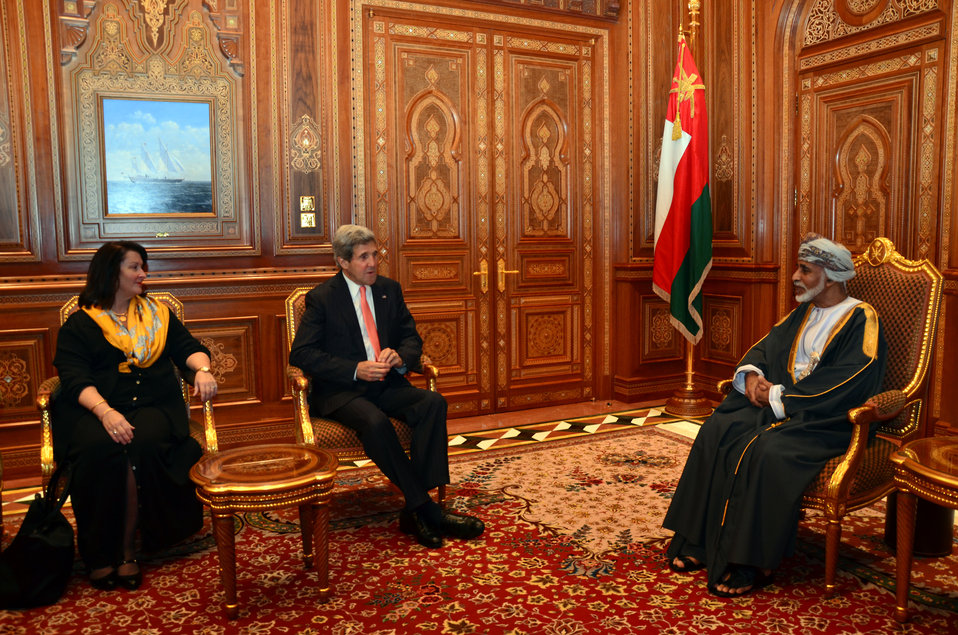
Secretary Kerry and Ambassador Holtz Meet With Omani Sultan Qaboos bin Said Al Said

U.S. Secretary of State John Kerry and U.S. Ambassador to Oman Greta Holtz meet with Sultan of Oman Qaboos bin Said Al Said in Muscat, Oman, on May 21, 2013.